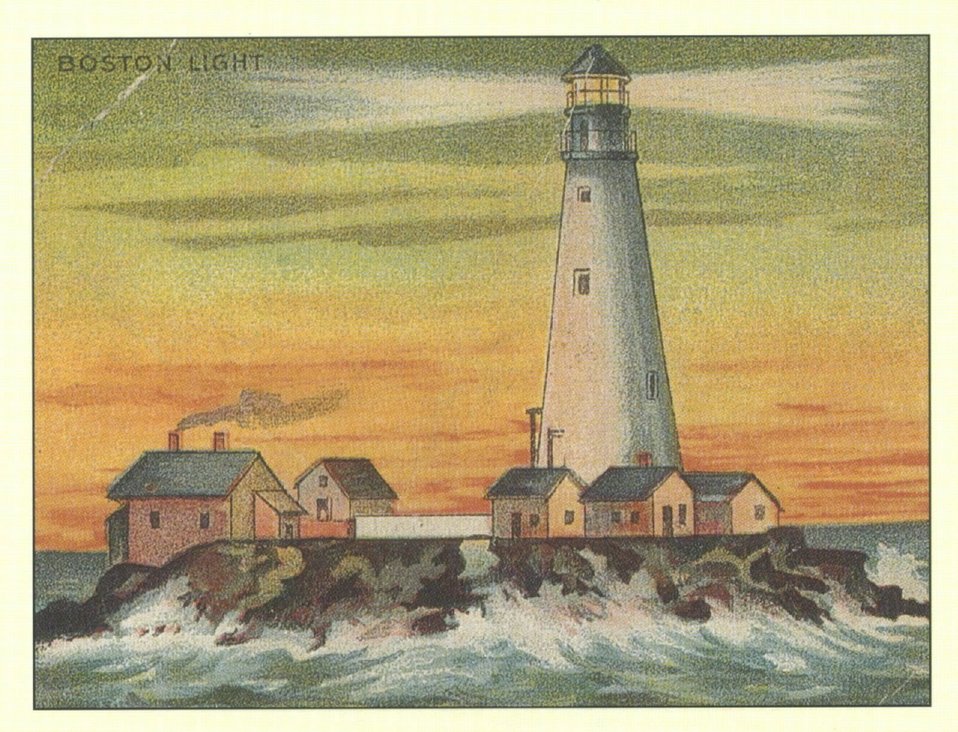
Boston Light